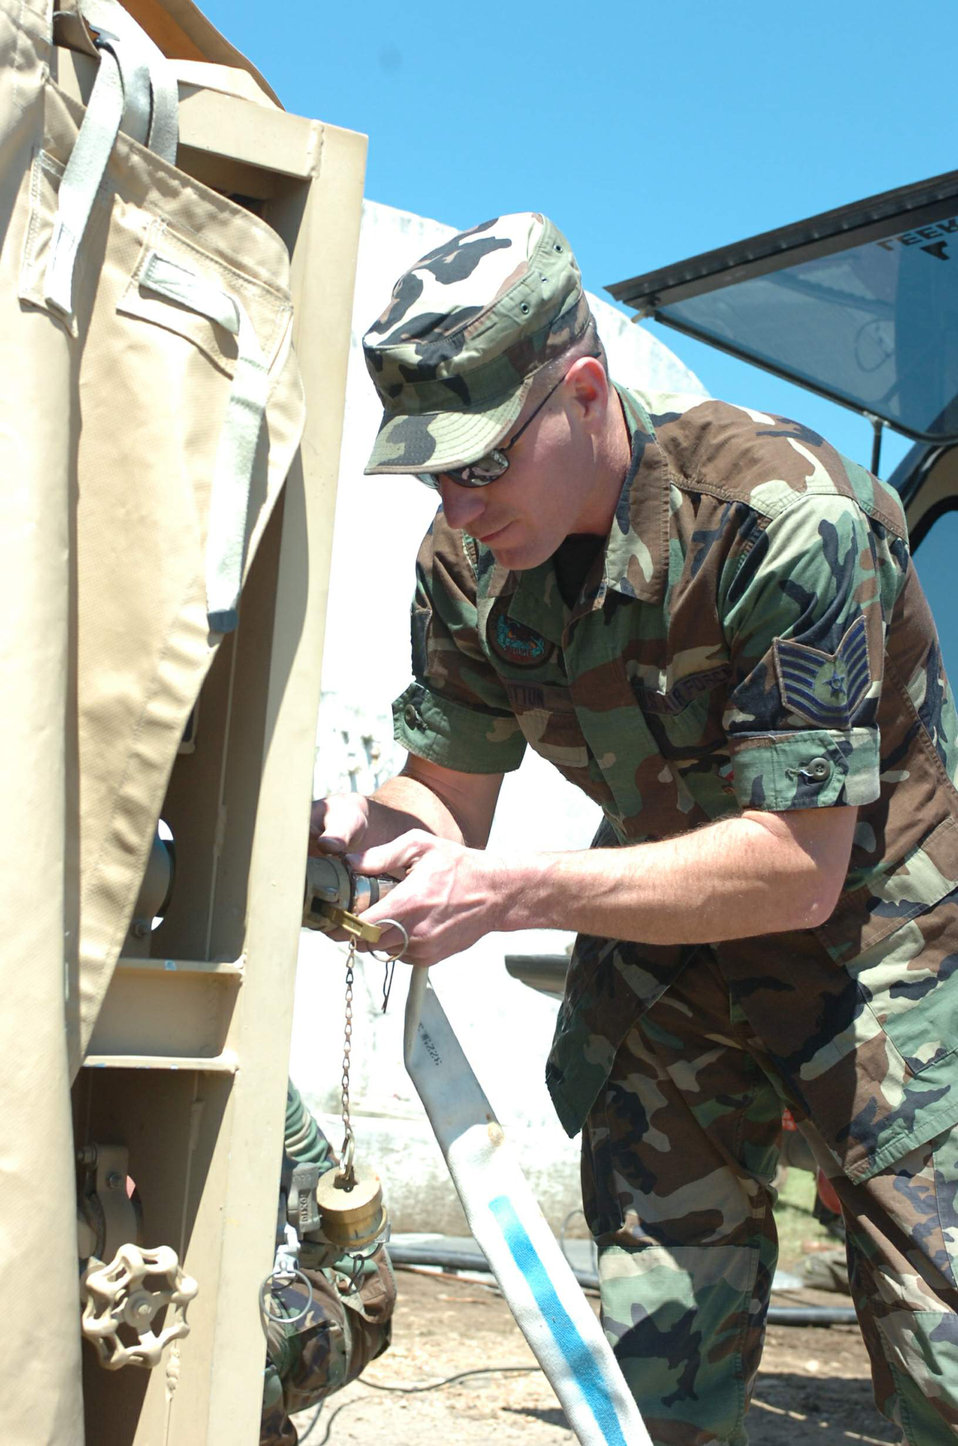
Airmen provide clean water for storm stricken Arkansas town

Tech. Sgt. Brian Sutton connects a supply hose to a water purification unit that will output purified water to support the water needs of the 1,230 residents of Dierks, Ark. The community's only water treatment facility was heavily damaged by a tornado April 9. Sergeant Sutton is a utilities systems management specialist with the 188th Fighter Wing's Civil Engineer Squadron of the Arkansas Air National Guard.